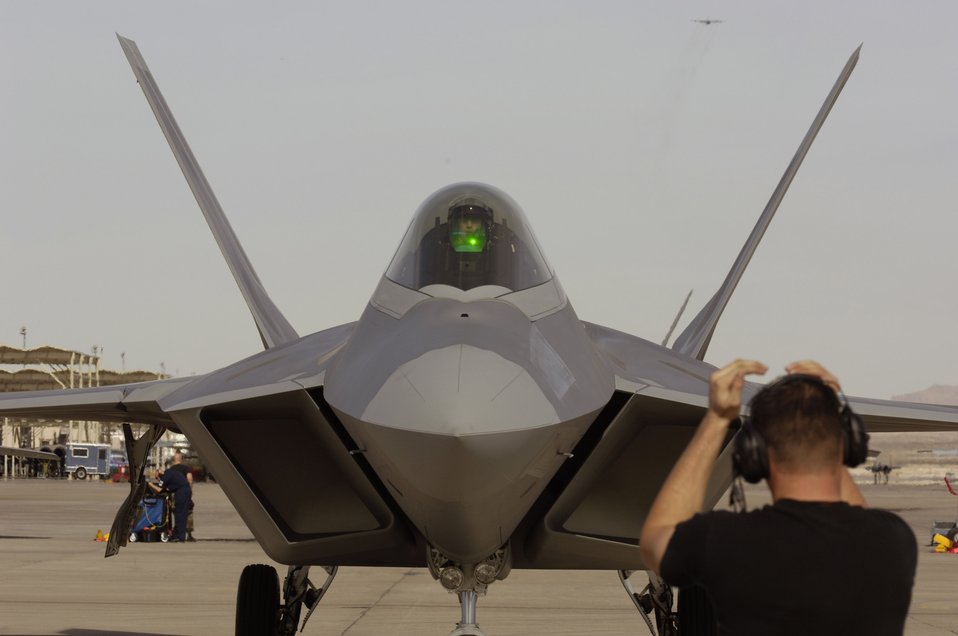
Raptors invade Nevada

Senior Airman William Rotroff taxies in a F-22 Raptor during Red Flag 07-02 Feb. 6 at Nellis Air Force Base, Nev. Red Flag sharpens aircrews' warfighting skills in realistic combat situations. The F-22 will be flying missions during the day and night to the nearby Nevada Test and Training Range where they will simulate an air war. The Air Force and Navy, along with military forces from Australia and the United Kingdom, are participating in Red Flag. Airman Rotroff is a tactical aircraft maintenance specialist with the 94th Fighter Squadron at Langley Air Force Base, Va. This is the first deployment to Red Flag for the 94th FS with the F-22.